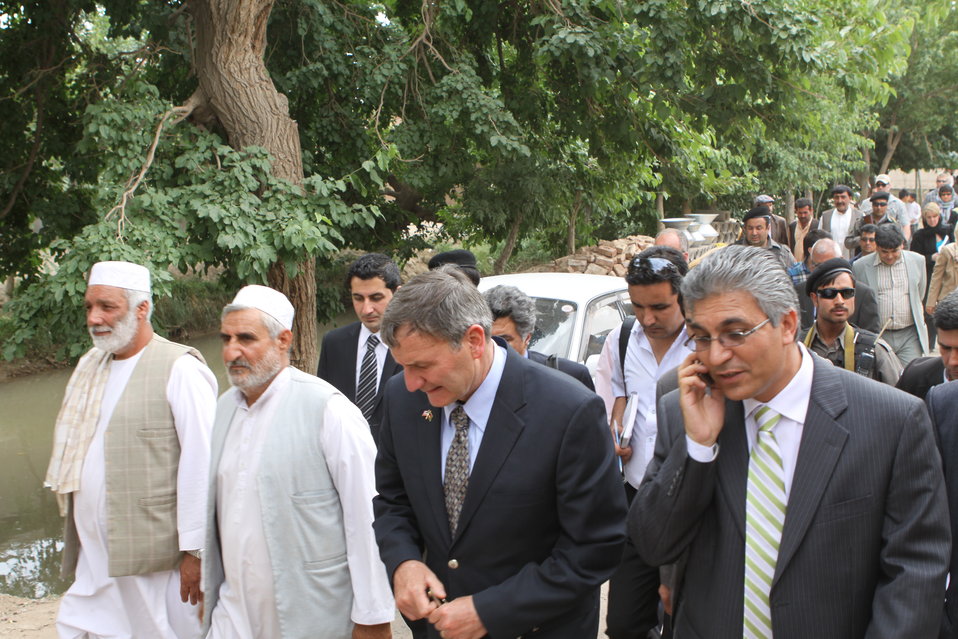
100525 Hirat Marble Conference 671